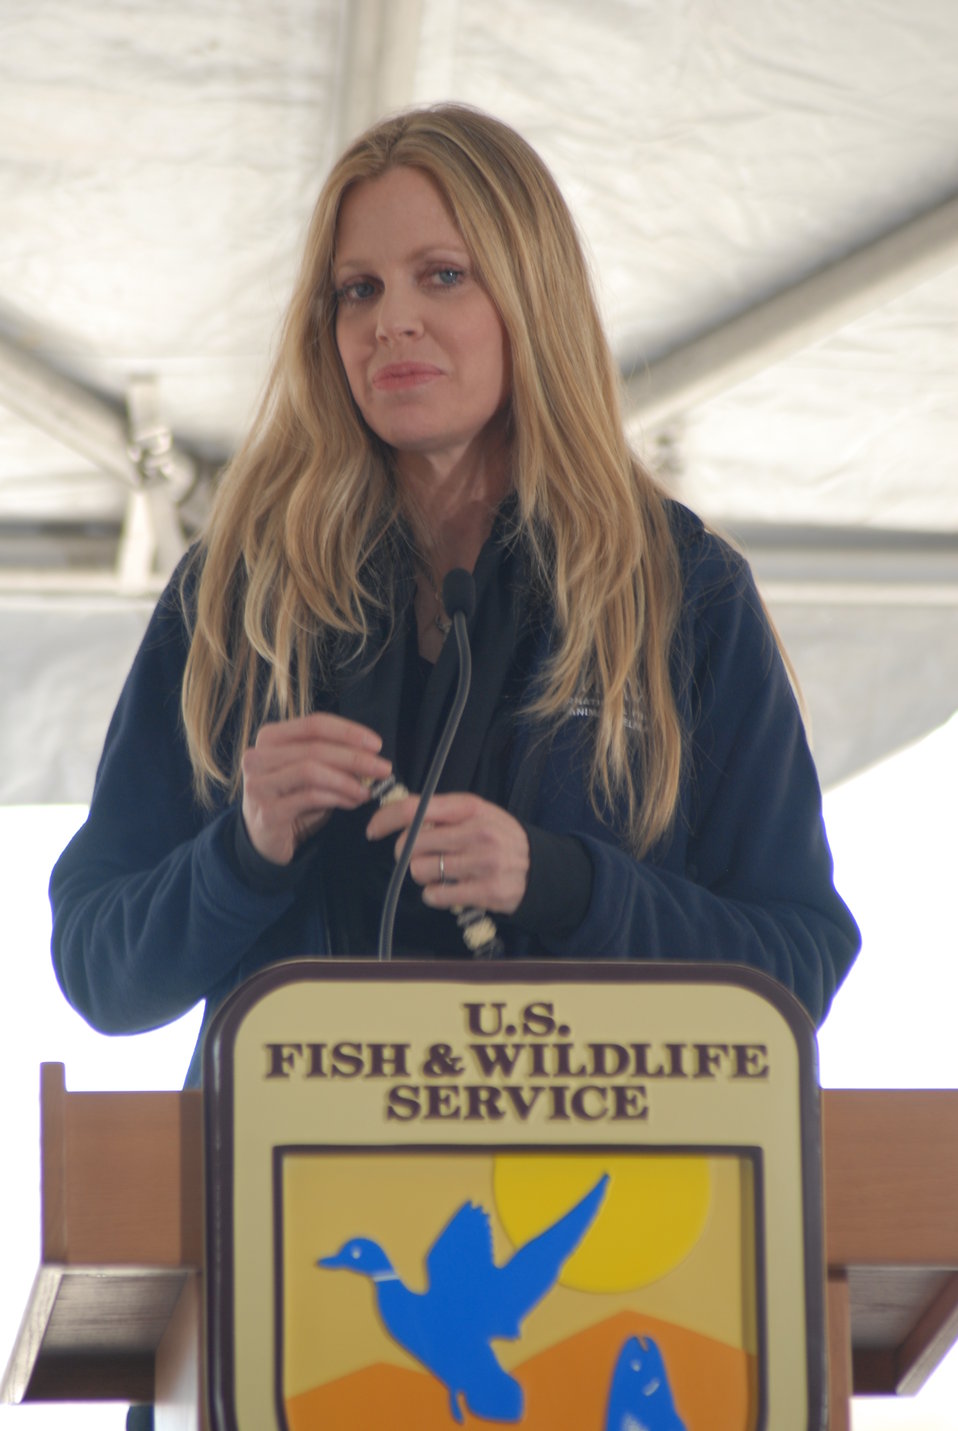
Kristin Bauer, actress and IFAW Ambassador, speaks at the U.S. Ivory Crush.